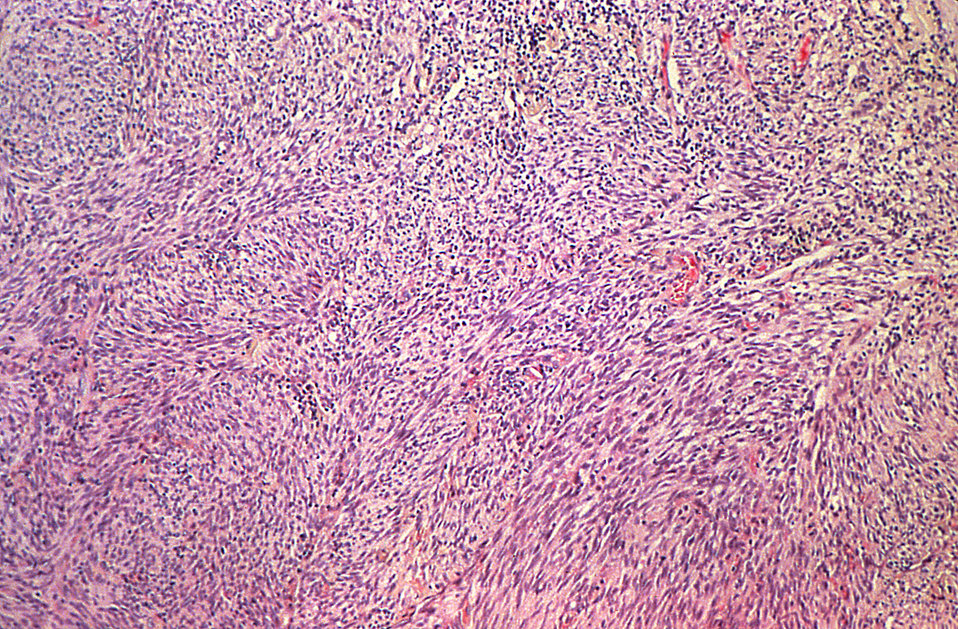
This photomicrograph of a skin biopsy reveals some cytoarchitectural signs that are indicative of Kaposi's sarcoma.